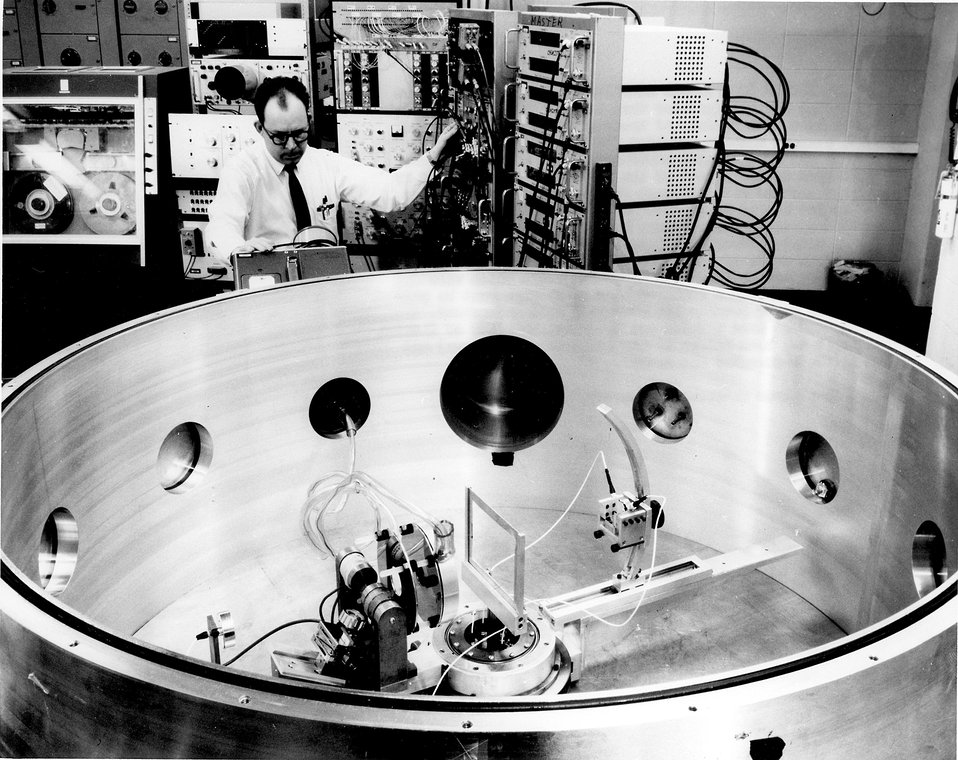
The interaction of high energy protons (greater than 1 Bev.) with atomic nuclei gives rise to a rich variety of breakup processes. c. 1971